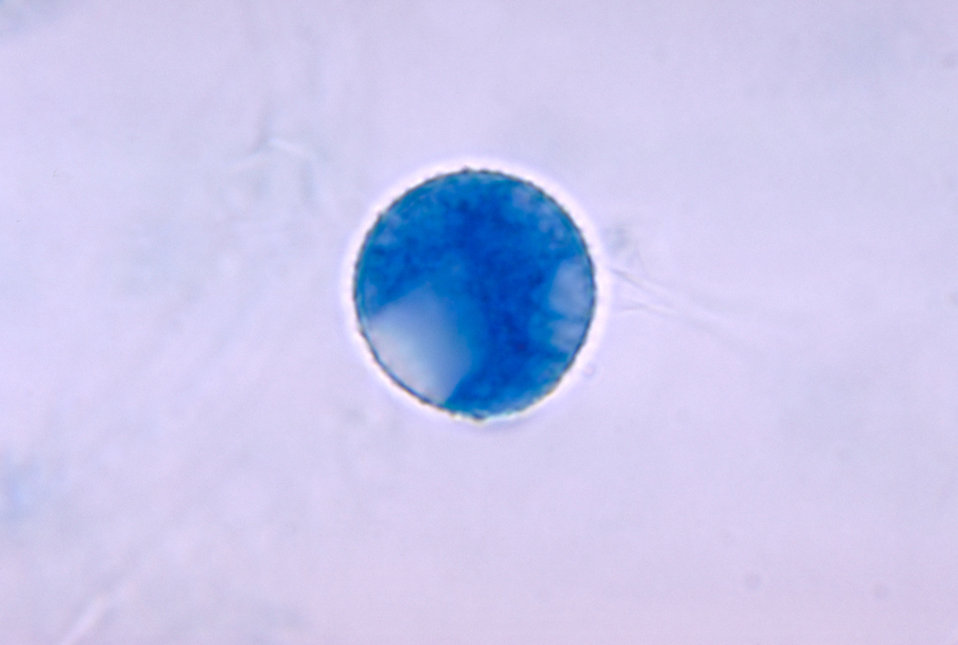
This photomicrograph shows a resting spore of the fungus Basidiobolus meristosporus.